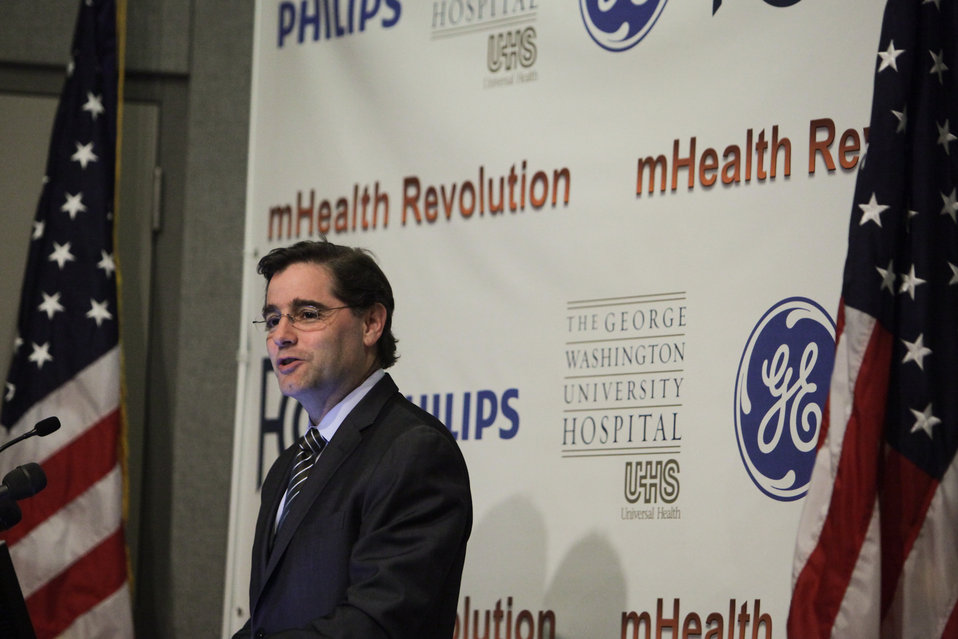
FCC Chairman Genachowski Speaks at GW University Hospital About MBANs

FCC Chairman Genachowski speak about MBANs at George Washington University Hospital in Washington, DC.

May 17, 2012.